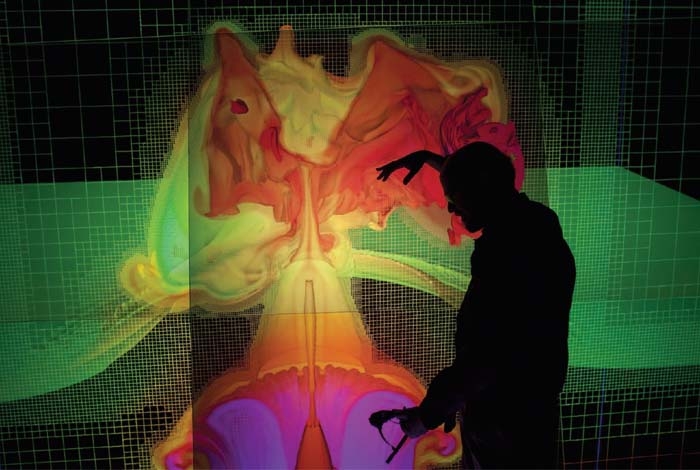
AT LOS ALAMOS NATIONAL LABORATORY, USING SUPERCOMPUTERS, SCIENTISTS CAN INTERACT WITH SIMULATIONS OF EVERYTHING FROM NUCLEAR DETONATIONS TO PROTEIN SYNTHESIS OR THE BIRTH OF GALAXIES.

SCIENTISTS WEAR SPECIAL GLASSES TO VIEW SIMULATIONS IN 3D AT EXTREMELY HIGH RESOLUTION. THEY CAN EVEN MANIPULATE THE SIMULATIONS AS THE VIEWER SHOWN HERE IS DOING.